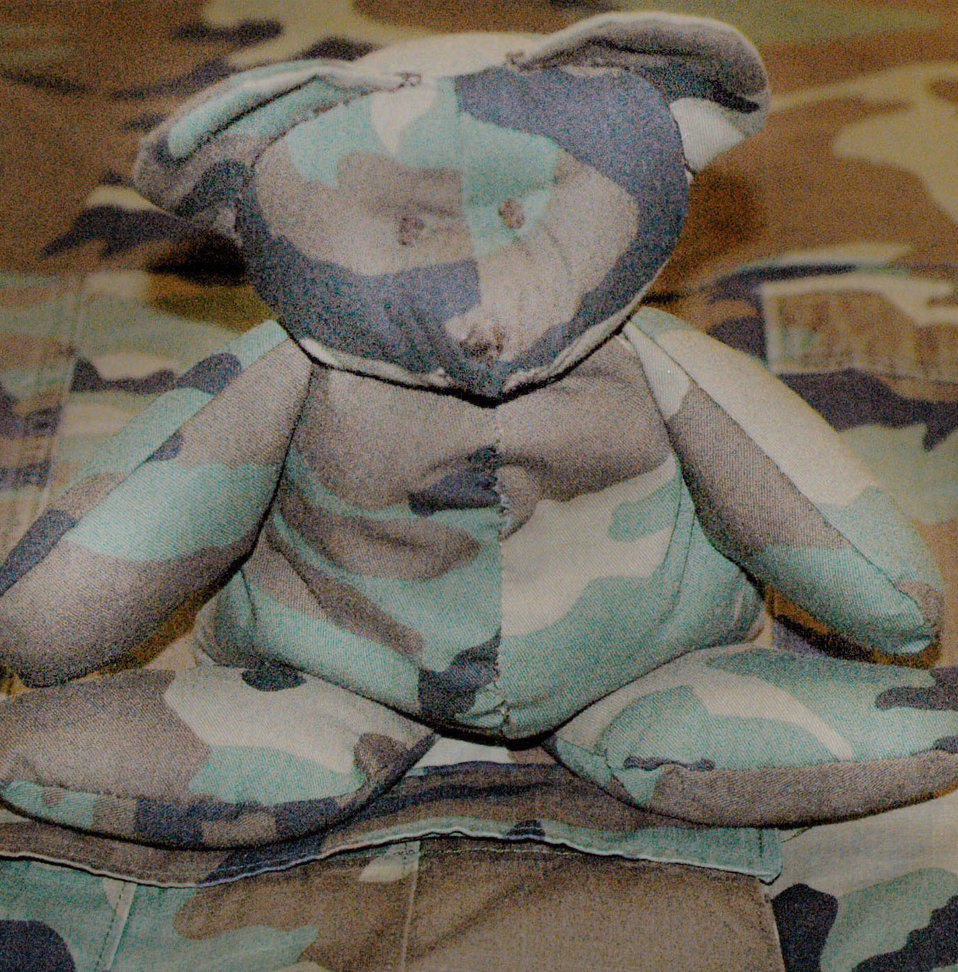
Airmen make good use of old uniforms

ROYAL AIR FORCE LAKENHEATH, England -- Teddy bears were made from unserviceable battle dress uniforms by members of the Air Force Sergeant's Association here. The teddy bears will be donated to Iraqi children. The group also made blankets out of the BDUs for local homeless people.